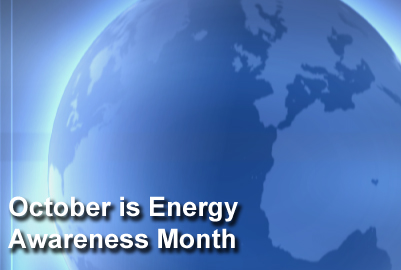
Senior leaders announce Energy Awareness Month

October is Energy Awareness Month throughout the government. The theme is 'Energy Solutions ... Fueling the Mission.' The theme highlights the importance of energy in the overall mission and supports the Air Force strategy to reduce demand, increase supply and change the culture.